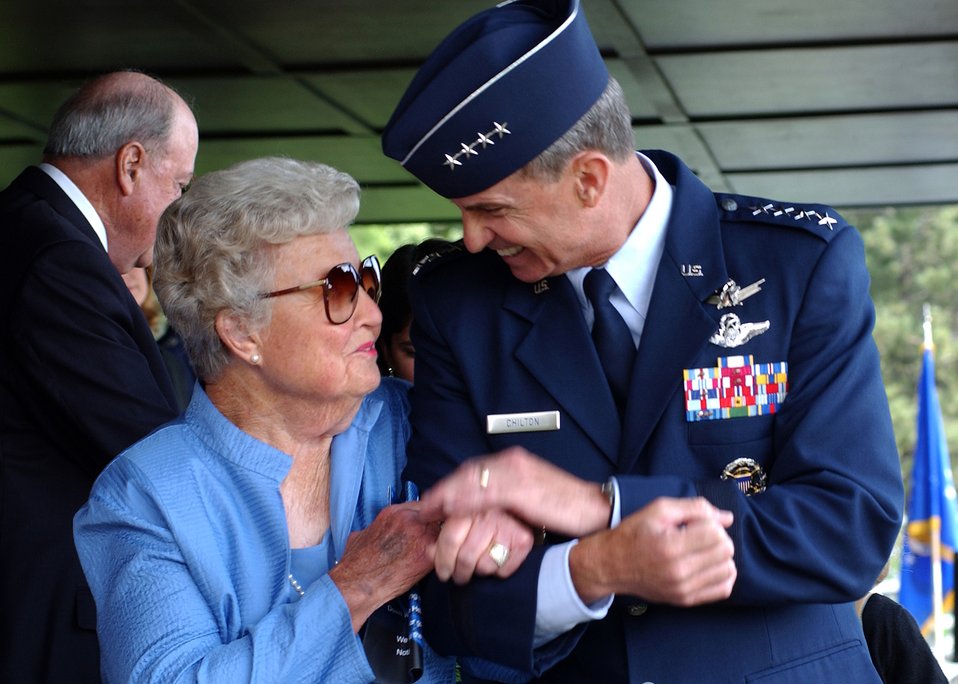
A time of celebration

Gen. Kevin P. Chilton, commander of Air Force Space Command, shares a celebratory moment with his mother, Shirley Chilton, after his assumption-of-command ceremony on Monday, June 26, at Peterson Air Force Base, Colo.